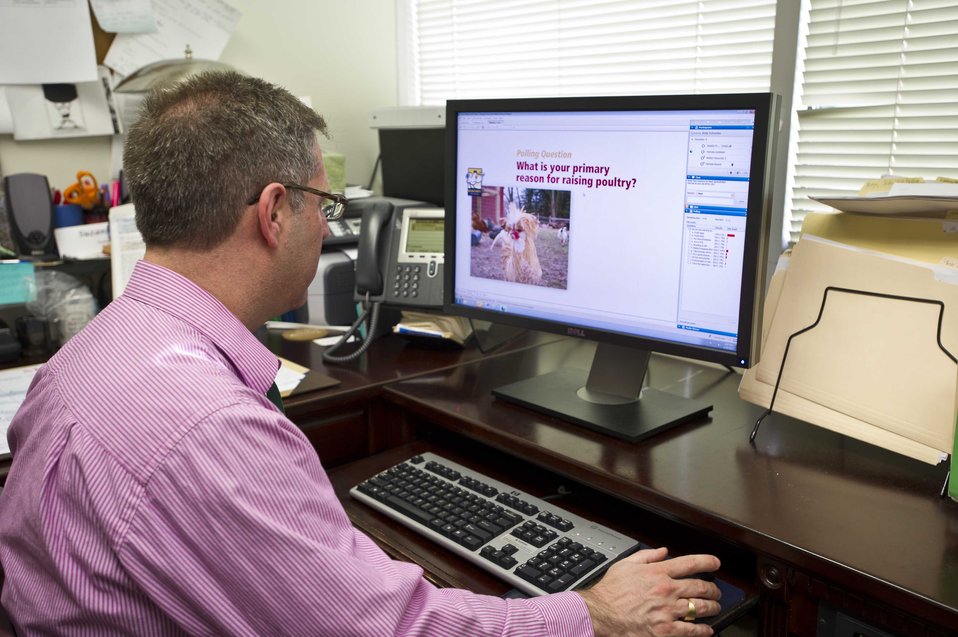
ScottKravetz

U.S. Department of Agriculture (USDA) Animal and Plant Health Inspection Service (APHIS) Customer Support Communications Specialist Scott Kravetz participates in the Bird Health Awareness Week webinar on Feb. 28, 2013.